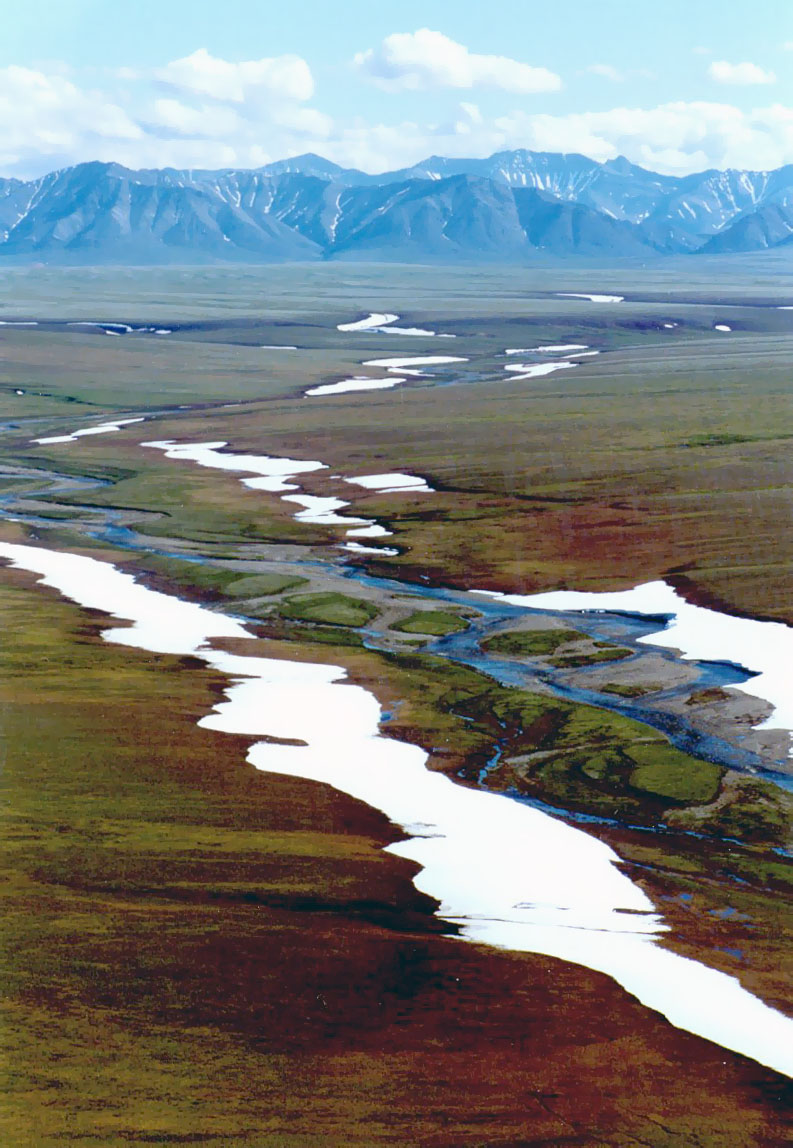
1002 Area: looking toward Brooks Range

1002 Area of the Arctic National Wildlife Refuge coastal plain, looking south toward the Brooks Range mountains.